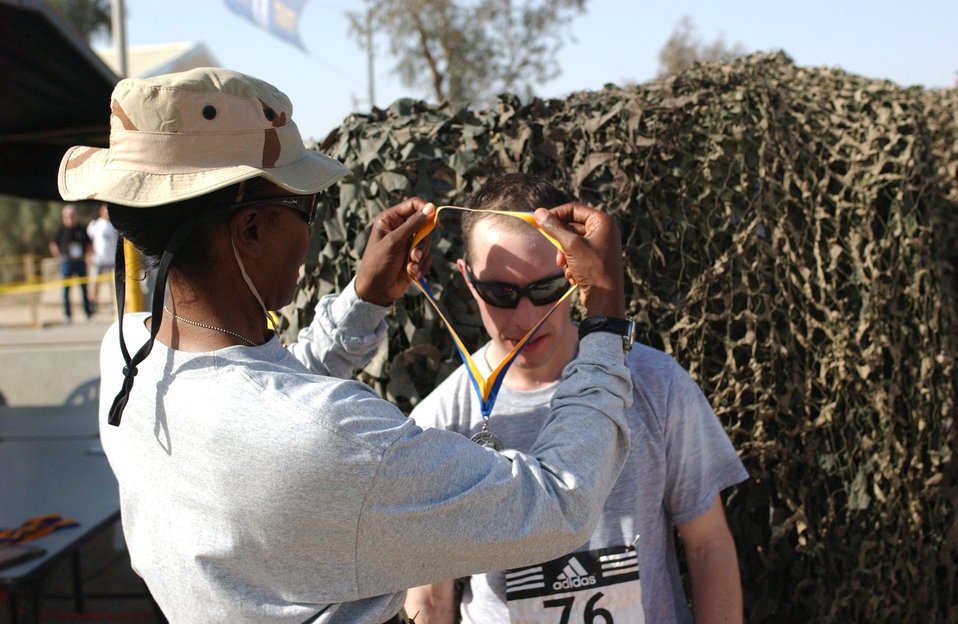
Boston Marathon comes to Iraq

Capt. Casey Jackson receives his medal after finishing second in the 2nd Annual Boston Marathon at Ali Base, Iraq, on Saturday, April 15, 2006. He crossed the finish line with a time of 3 hours, 2 minutes, 17 seconds. Captain Jackson is deployed to the 407th Expeditionary Operations Support Squadron from Ramstein Air Base, Germany.